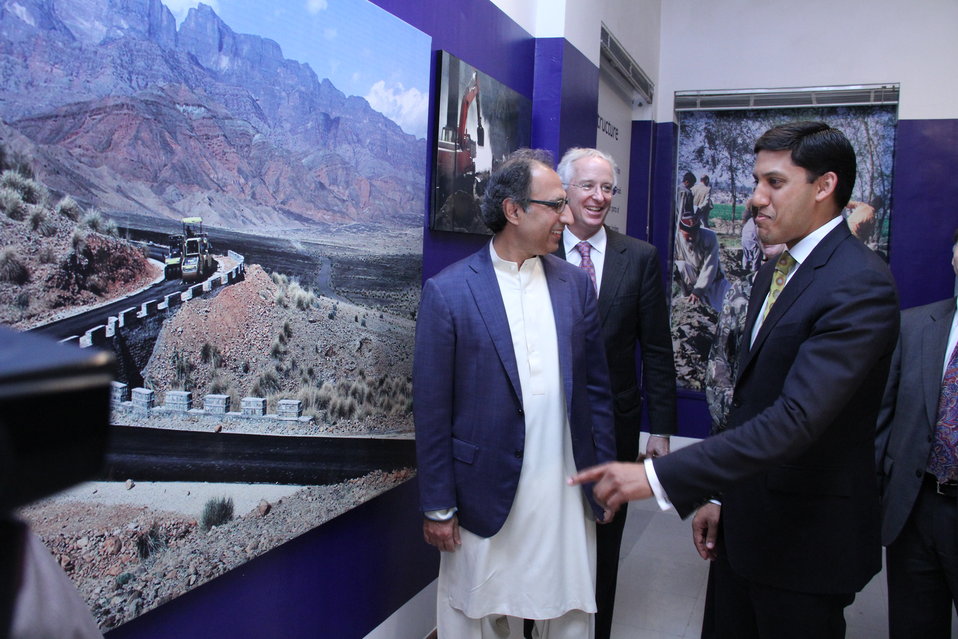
Photo Exhibition Celebrate US-PAK Cooperation at PNCA, Islamabad on April 13, 2012

Dr. Abdul Hafeez Sheikh, Federal Minister for Finance, US Ambassador Cameron Munter & Administrator of the USAID Dr. Rajiv Shah